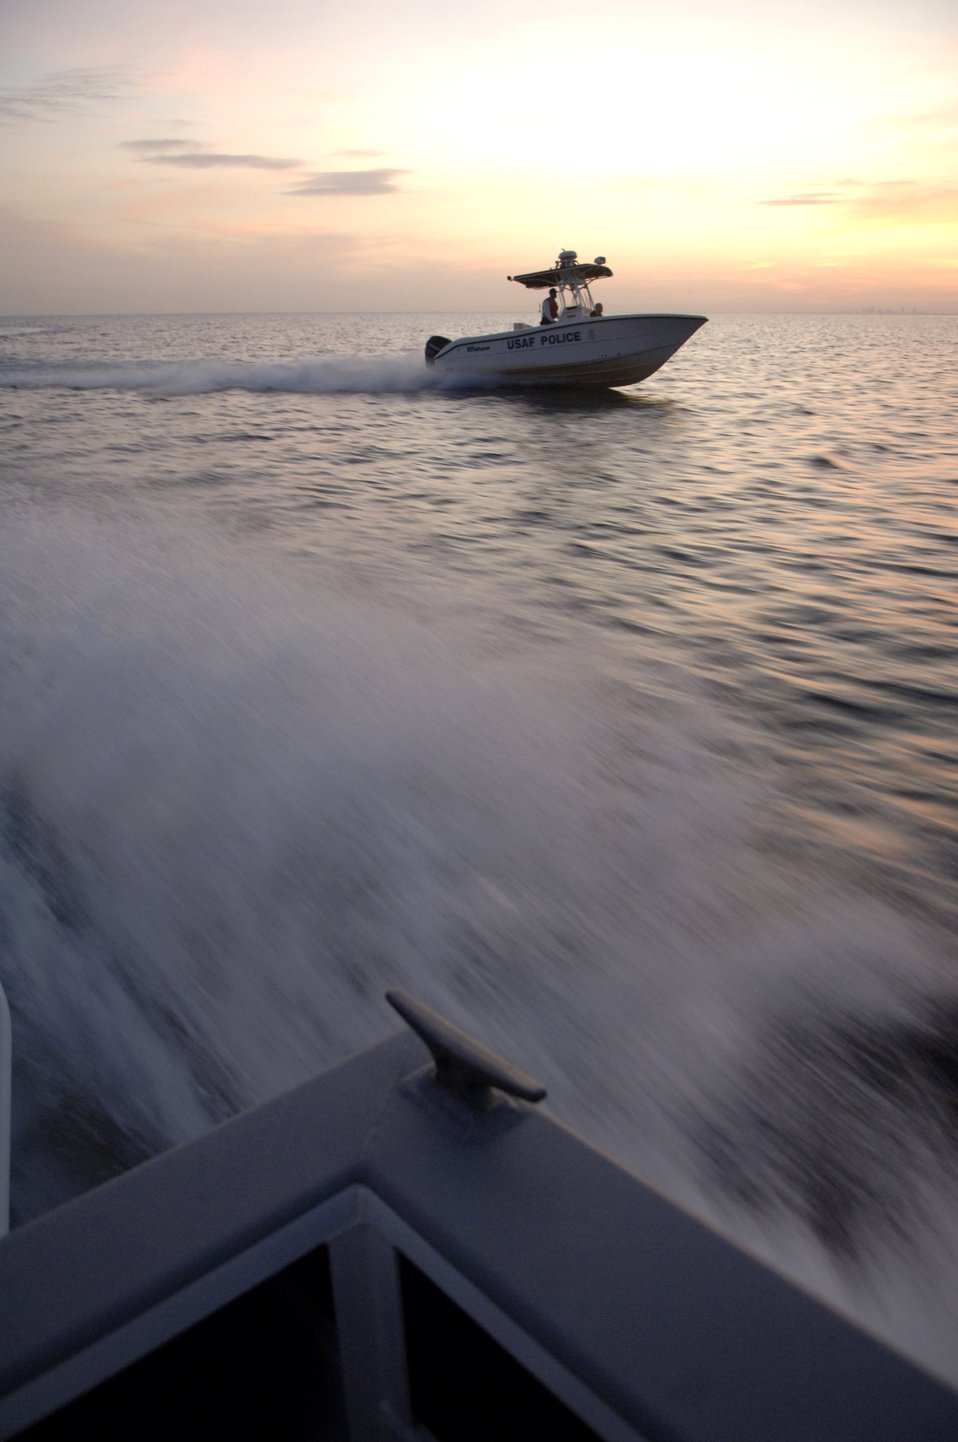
Bay watch

Members of the 6th Security Forces Squadron boat patrol at MacDill Air Force Base, Fla., police Tampa Bay Nov. 27. The 6th SFS is one of the few security forces squadrons in the Air Force to have a boat patrol and the only one to patrol overnight.